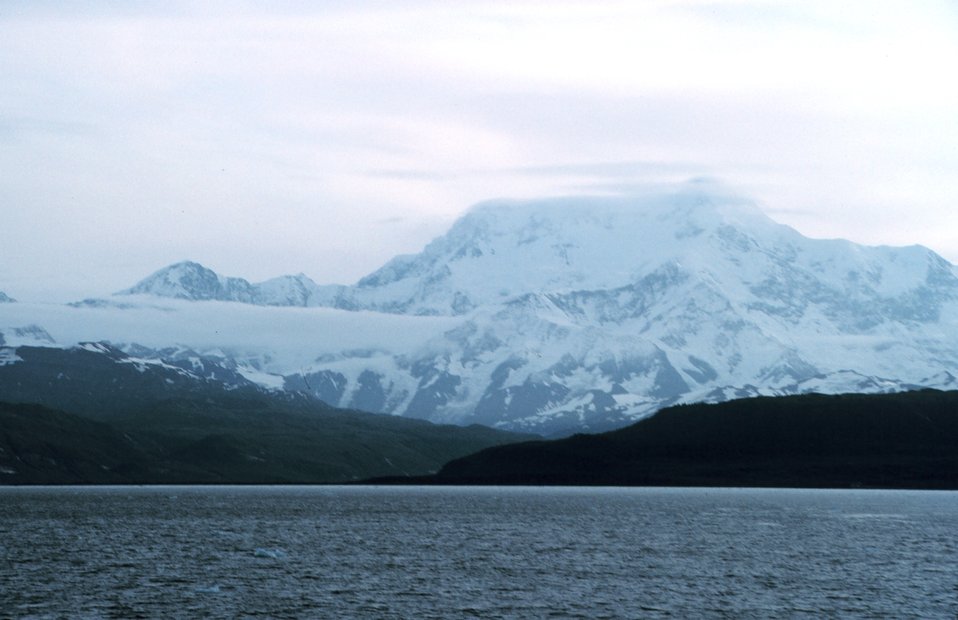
Photo #20 of Mount St. Elias sequence.